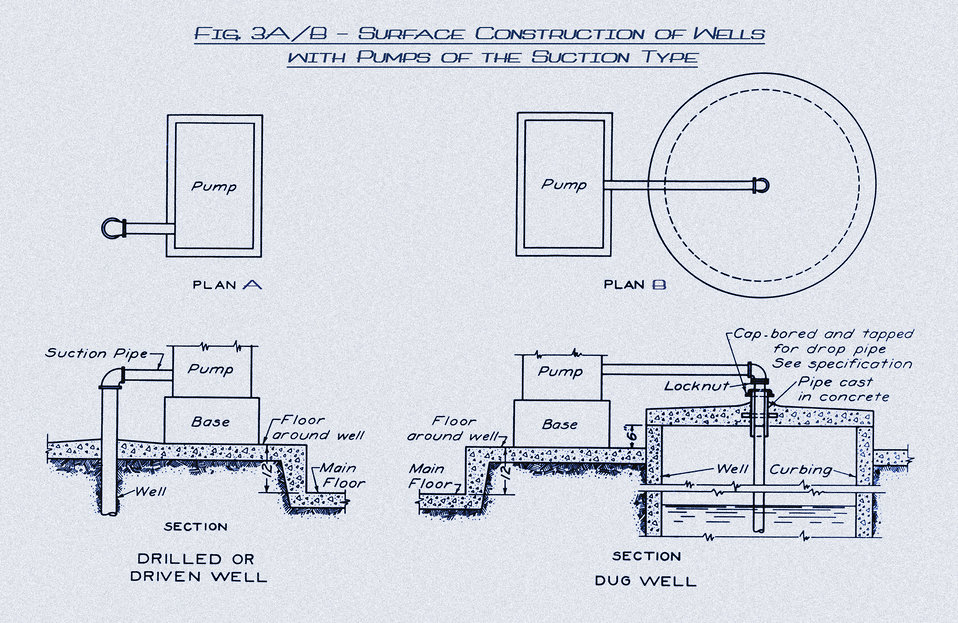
This historic diagram, which had been digitally enhanced and colorized, depicted the surface construction of a 'dug'-, 'drilled'-, and 'driven'-type wells that were equipped with suction pumps. The cross-sectional renderings identified the components, placing them into the approximate relationship to one another, in their optimal positions, in order to achieve maximum performance efficiency.